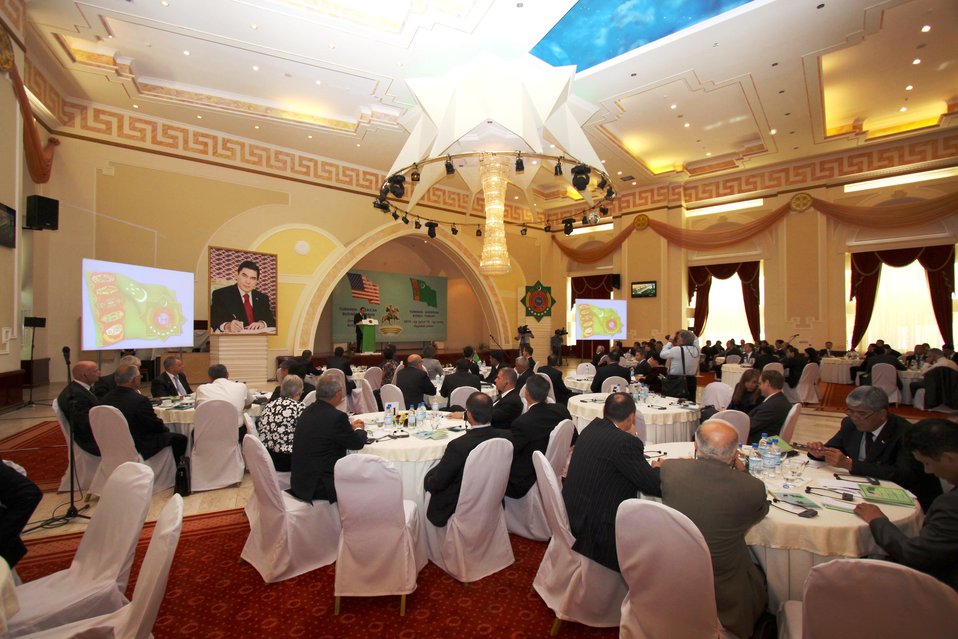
Delegates participate in the U.S.-Turkmenistan Business Council Forum in Ashgabat, Turkmenistan, on June 16, 2010.